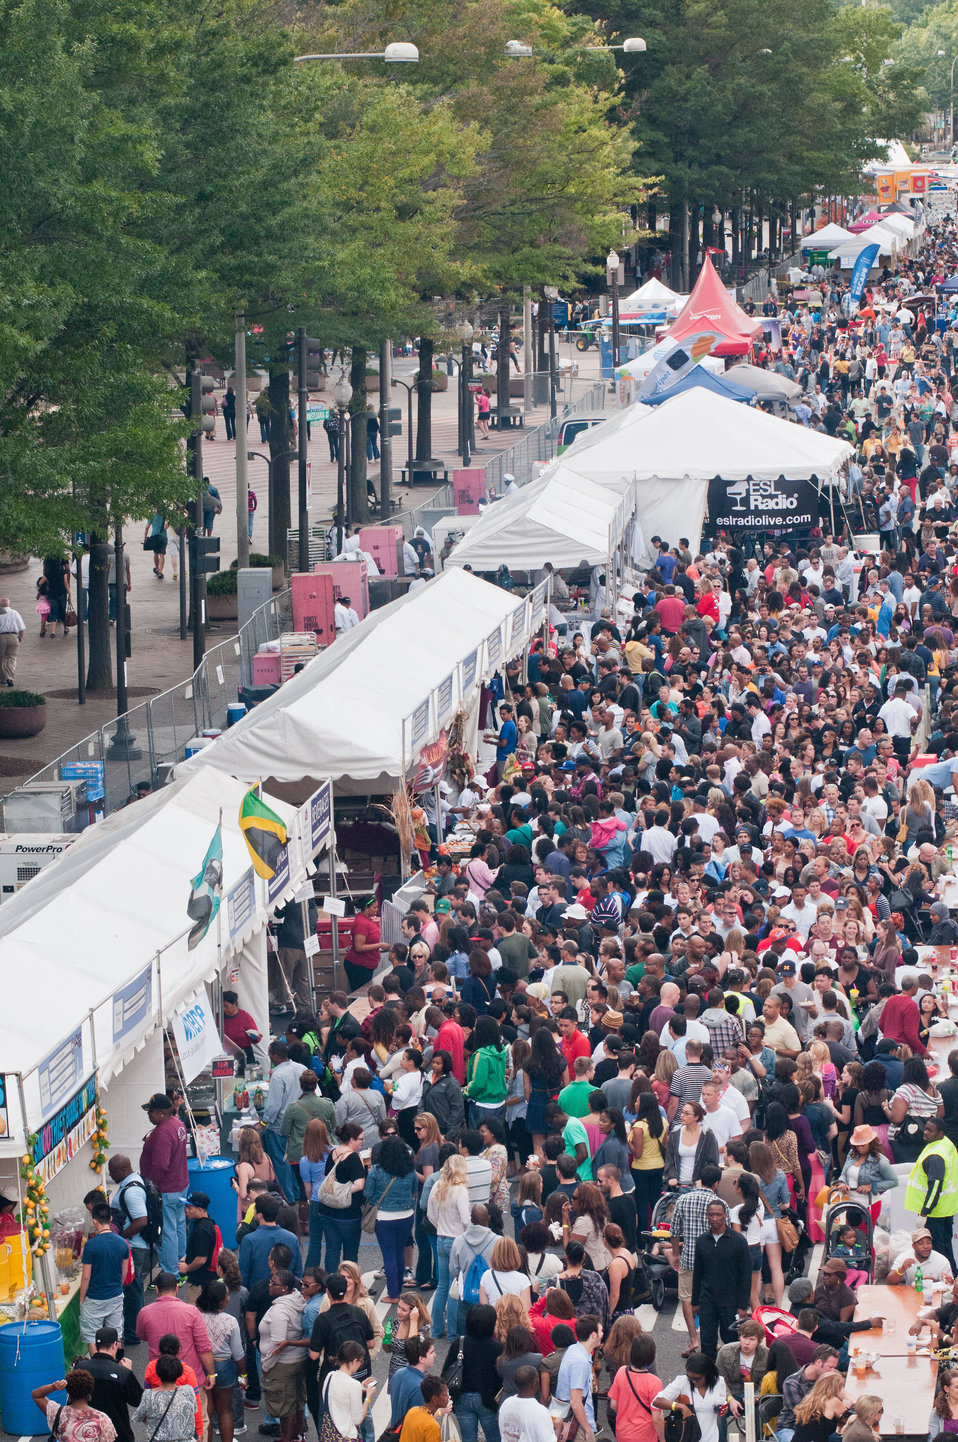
The Taste of D.C., event highlights more than 70 eateries, 30 specialty beer providers, the United Service Organization (USO) Metropolitan Washington, and live bands. It is anticipated that more than 500,000 people will attend over the course of the three-day event, which extends from the White House to the Capitol, along Pennsylvania Ave. in Washington D.C. on Saturday, October 6, 2012. Agriculture Food Safety and Inspection Service specialists present talks and cooking demonstrations. Agriculture’s mobile Discovery Zone is on hand to educate children and parents about the four main principals of food safety – clean, separate, cook and chill.